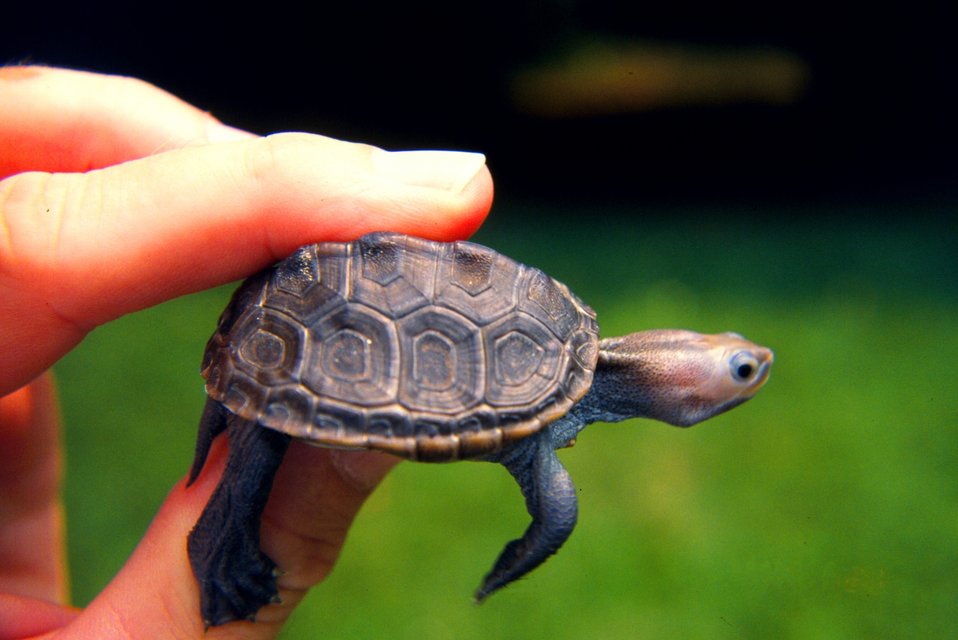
Baby diamondback terrapin, Malachlenys terrapin.